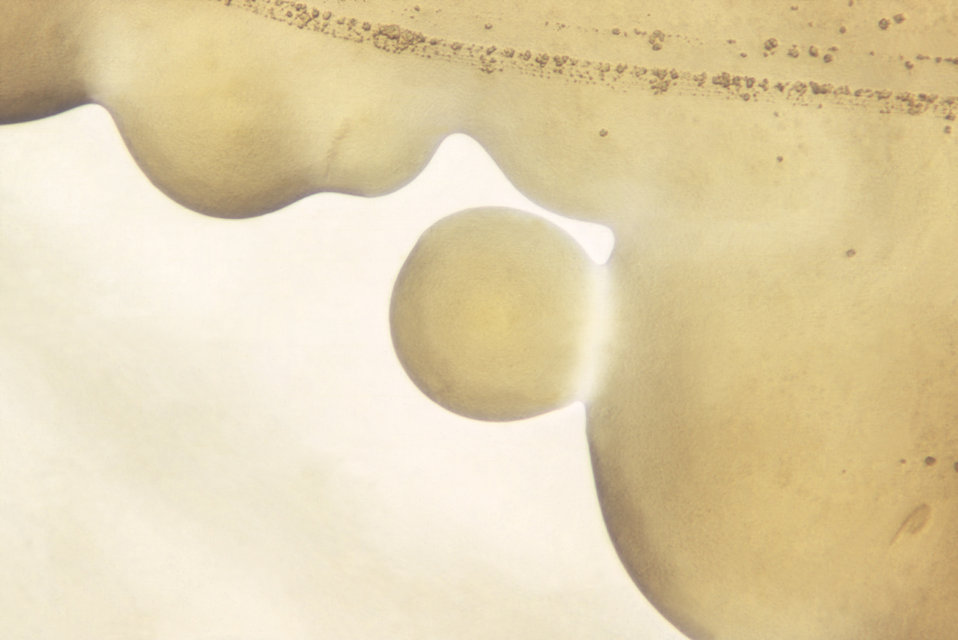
This 1972 image depicted the morphologic appearance of Neisseria gonorrhoeae colonies after having grown for a period of 24 hours on GC media base agar supplemented with IsoVitaleX. These were photographed here at a magnification of 50X. GC media base agar is used in the isolation of N. gonorrhoeae bacteria, and is often used in conjunction with various antibiotics, in order to determine N. gonorrhoeae antimicrobial sensitivity/selectivity.What are the signs and symptoms of gonorrhea?